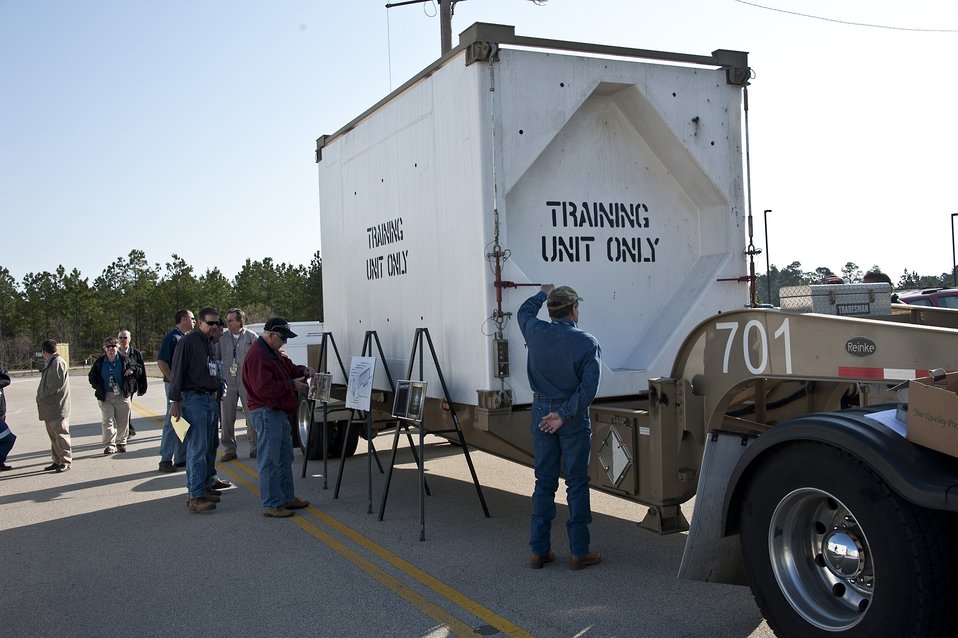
SRS Trupact

Members of the public gathered at the Savannah River Site (SRS) earlier this year for a road show hosted by the DOE Carlsbad Field Office. New Recovery Act-funded waste shipment containers, called TRUPACT-III, were on hand for public viewing at the show. The containers are used to ship legacy transuranic waste from SRS to the Waste Isolation Pilot Plant in New Mexico for safe, permanent disposal.